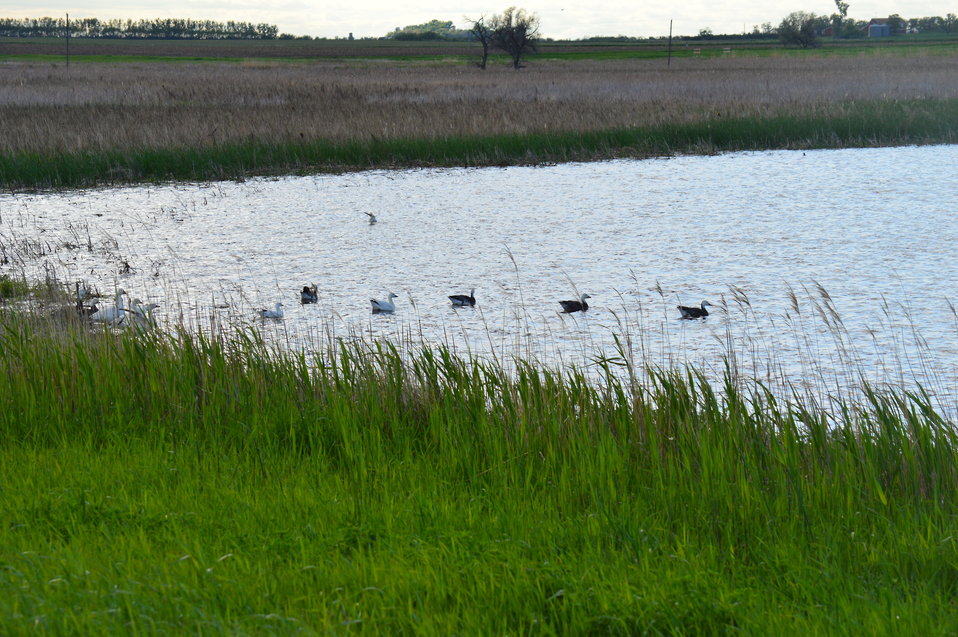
Snow Geese in Sand Lake

Scenery and wildlife at Sand Lake National Wildlife Refuge in South Dakota